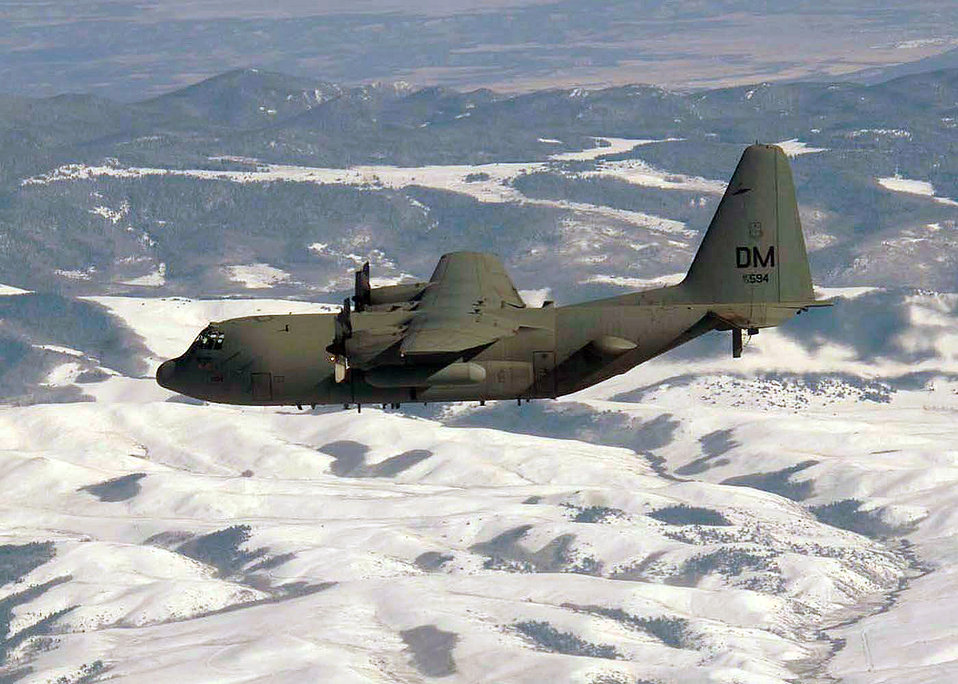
Compass call

OVER COLORADO (AFPN) -- An EC-130H Compass Call aircraft flies over snow-covers hills during a training mission. The aircraft is from the 55th Electronic Combat Group at Davis-Monthan Air Force Base, Ariz.